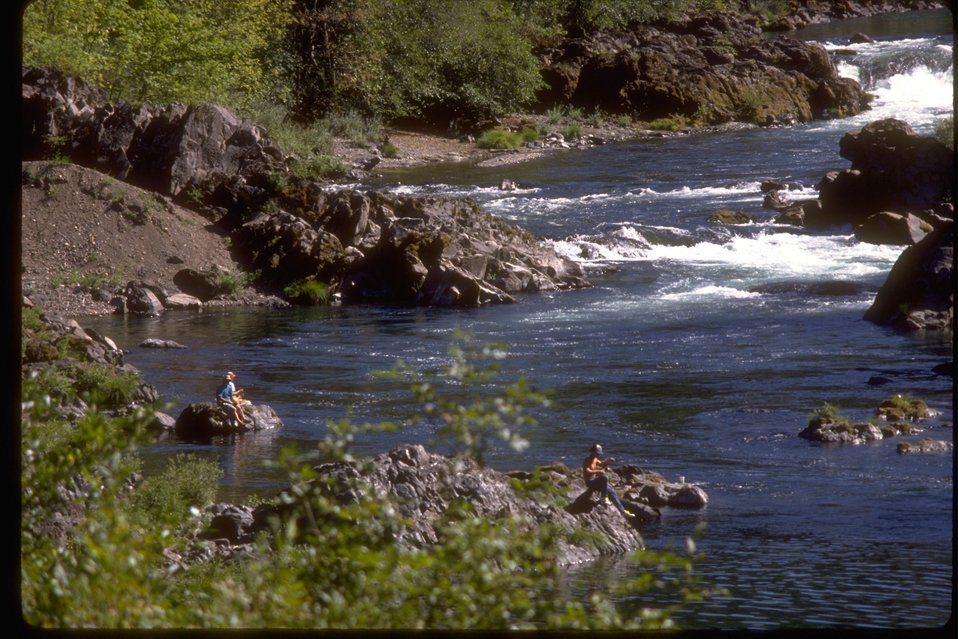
North Umpqua River Series.